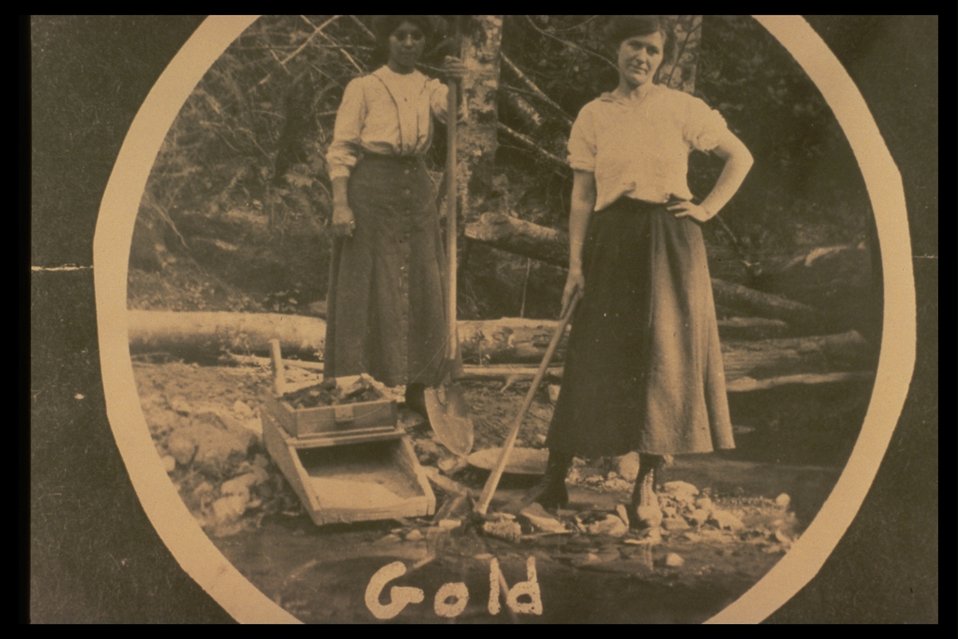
Black and white photo of two women posing next to a gold sluice box.